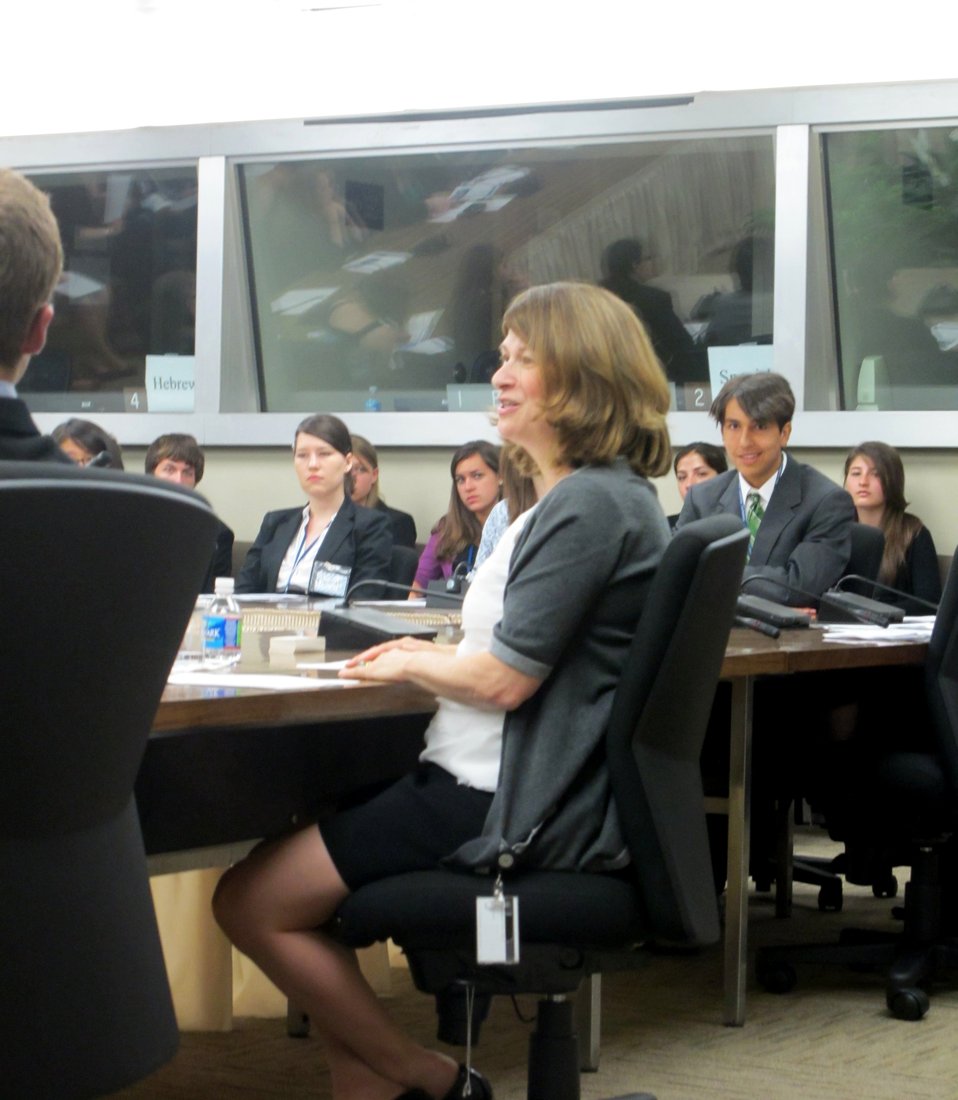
Senior Policy Advisor Efron Speaks to a Group of Students

Senior Policy Advisor for Democracy, Human Rights and Labor Sonni Efron speaks to a group of 83 students visiting the U.S. Department of State in Washington, D.C., on July 19, 2011.